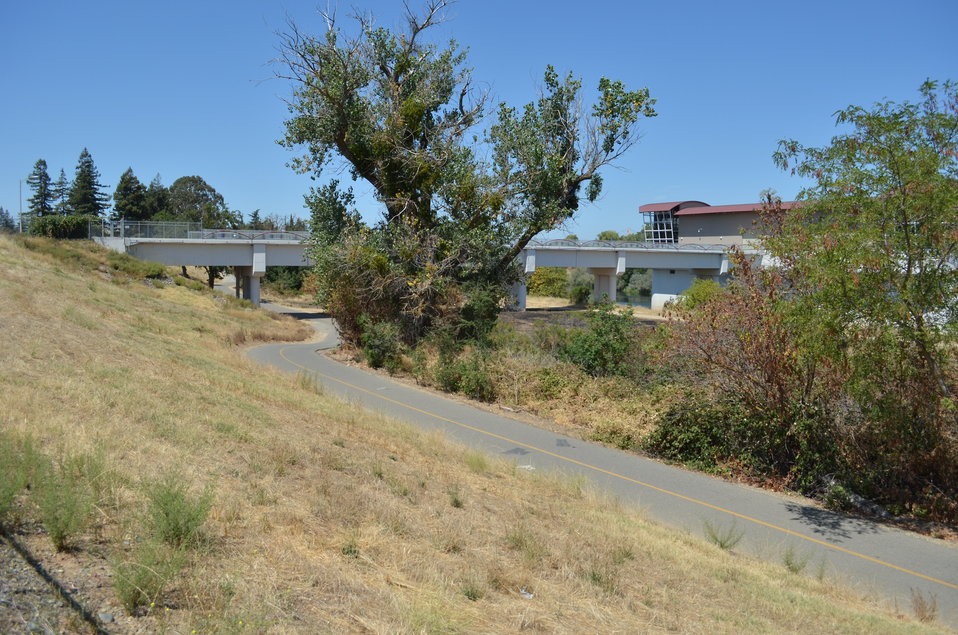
Preparing for levee work near the Fairbairn Water Treatment Plant in Sacramento, Calif.

The U.S. Army Corps of Engineers Sacramento District is preparing for levee work this summer along the American River near the Fairbairn Water Treatment Plant in Sacramento, Calif., shown Aug. 21, 2013. Water intake pipes, sewer mains and multiple utilities delayed levee construction near here more than a decade ago. The Army Corps built more than 20 miles of seepage cutoff walls into American River levees between 2000 and 2002, but work was set aside for later where complicated encroachments existed such as utilities, power lines and bridges.